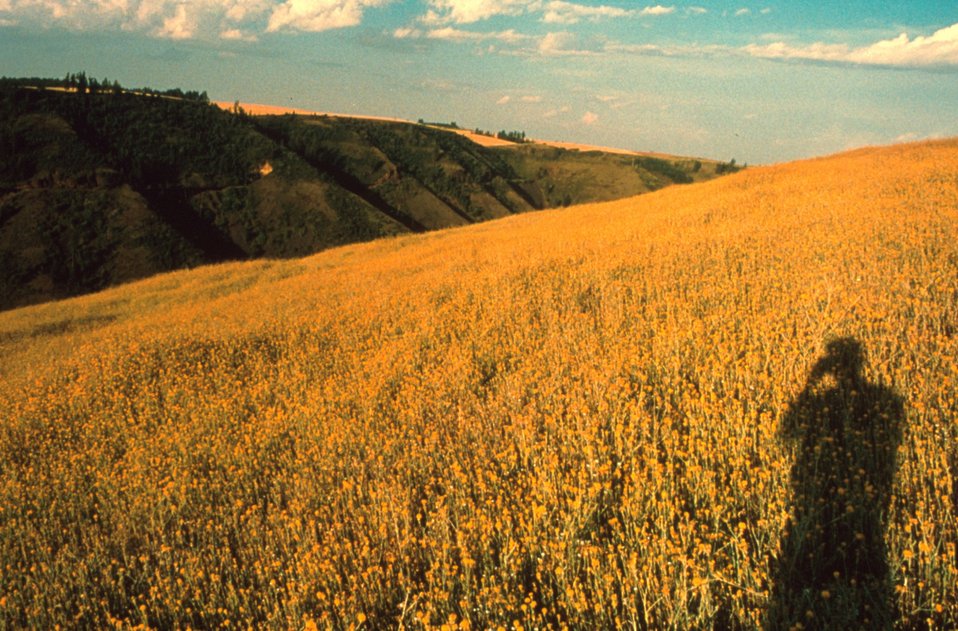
Yellow Starthistle Idaho vegetation Plants in BLM